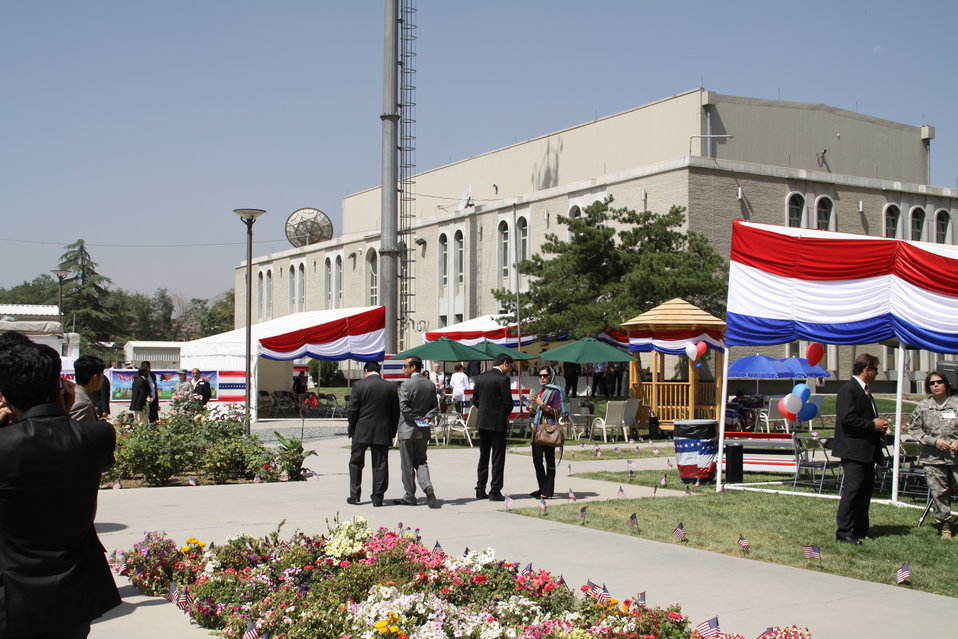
Kabul Official July 4th Celebration